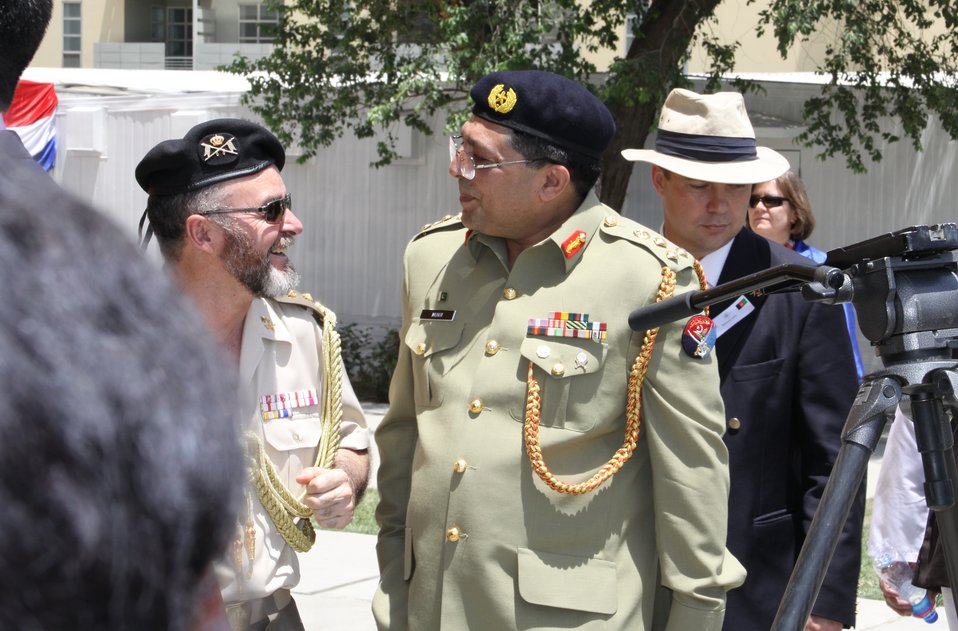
Kabul Official July 4th Celebration